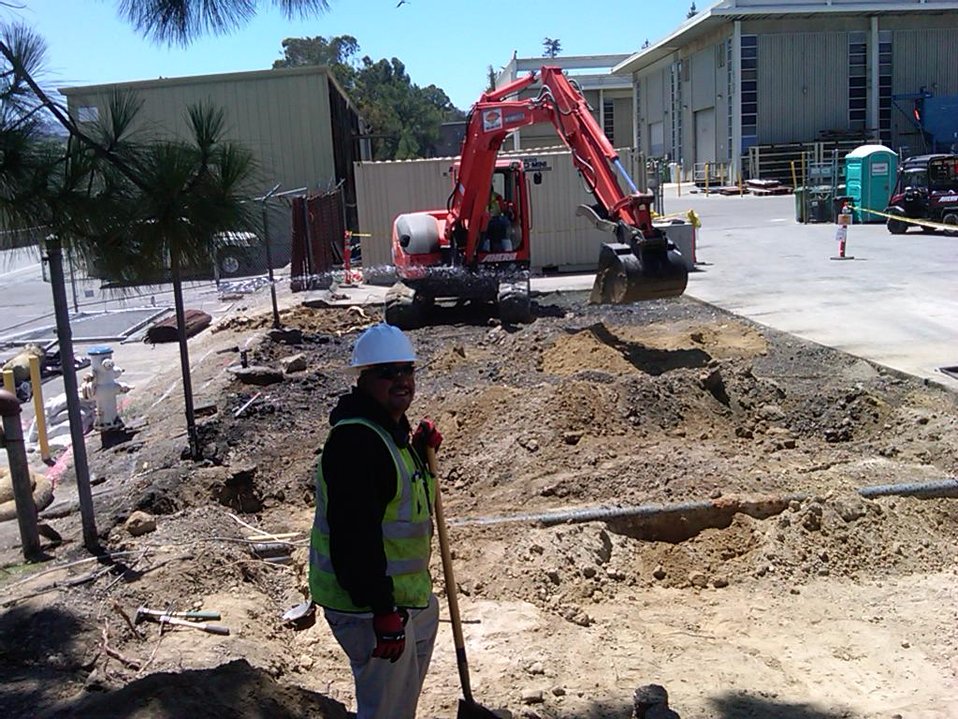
Recovery Act Supports Soil and Debris Cleanup, Groundwater Treatment at SLAC

Recovery Act workers are on track to remove more than 30,000 cubic yards of contaminated soil and debris at the SLAC National Accelerator Laboratory by September 2011.
The Recovery Act invested $14.3 million in legacy cleanup activities at SLAC. In addition to removing contaminated soil and debris that is shipped to local disposal facilities, Recovery Act workers installed three new groundwater treatment systems.